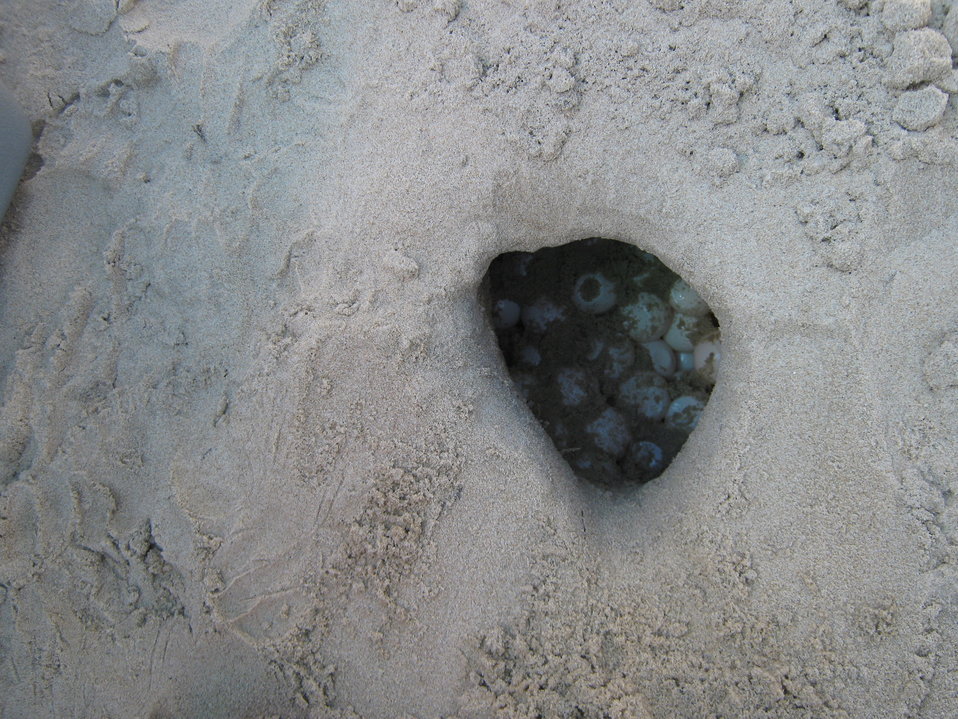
Sea turtle nest at Back Bay National Wildlife Refuge in Virginia.